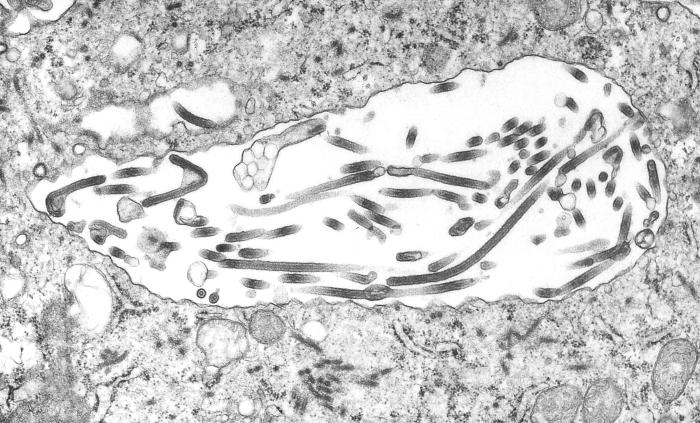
This 1995 transmission electron micrograph (TEM) revealed some of the ultrastructural morphologic changes in this tissue sample isolate brought on due to an Ebola hemorrhagic fever infection, including the presence of numbers of Ebola virions.